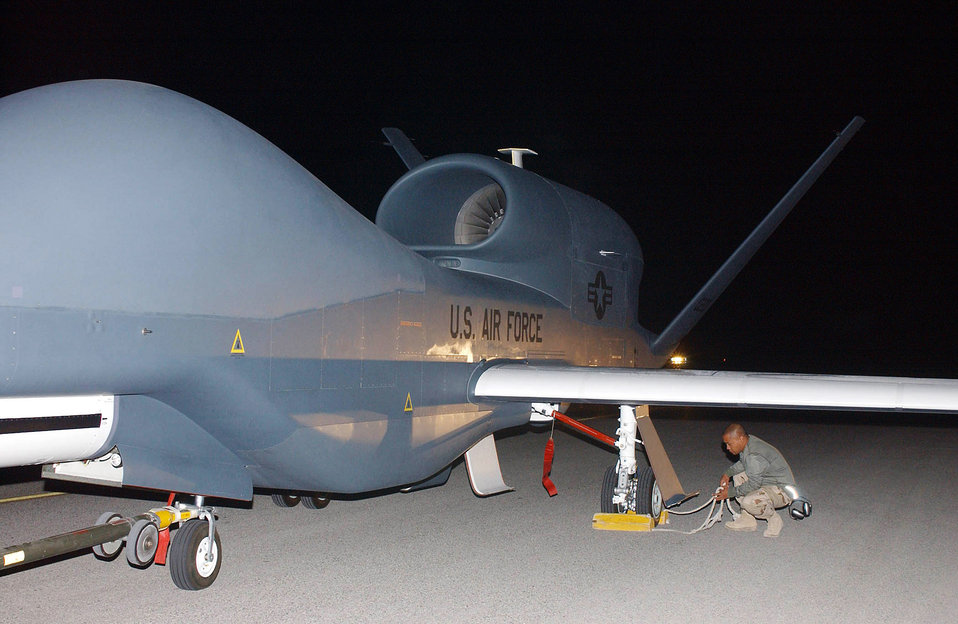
Airpower summary for June 3, 2007

Chocks are placed under a Global Hawk unmanned aerial vehicle after an intelligence, surveillance and reconnaissance mission in Southwest Asia. This Global Hawk flew one of 11 ISR missions supporting Operation Enduring Freedom June 3.